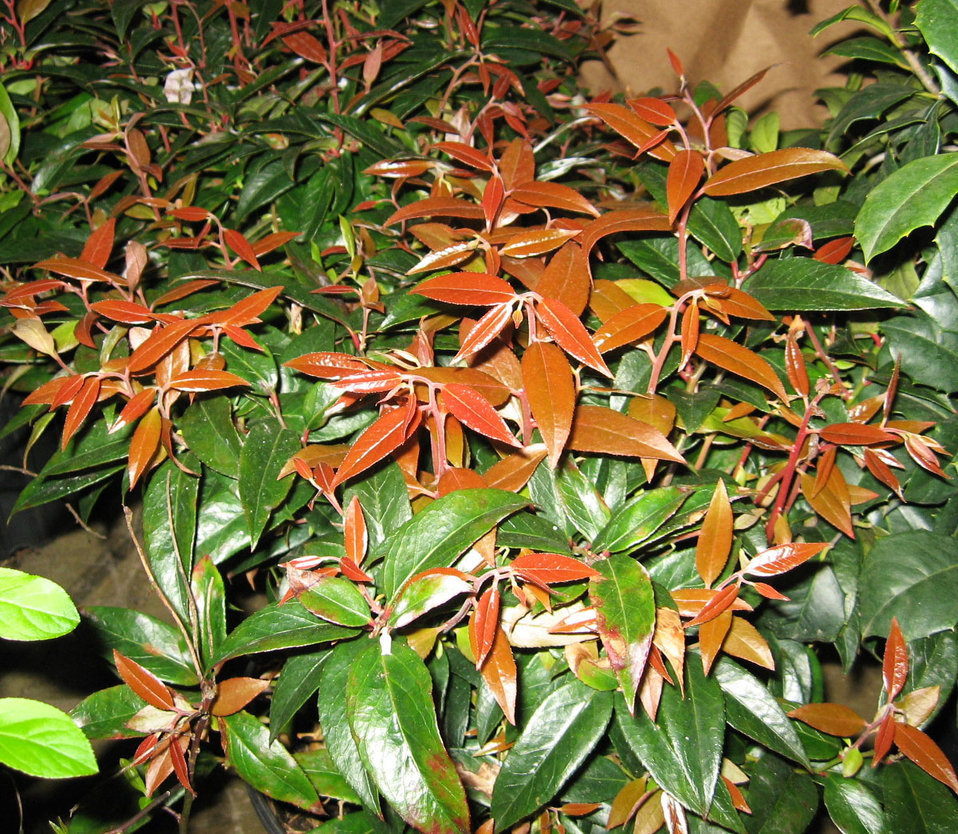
Coastal leucothoe

Leucothoe axillaris (Coastal leucothoe), a native plant

Learn more about EPA’s Exhibit at the 2010 Philadelphia International Flower Show:
www.epa.gov/reg3esd1/garden/flower show.htm
www.epa.gov/reg3esd1/garden/flower show plants.htm
www.epa.gov/reg3esd1/garden/pdf/flowershow2010.pdf (6 pp, 864K)